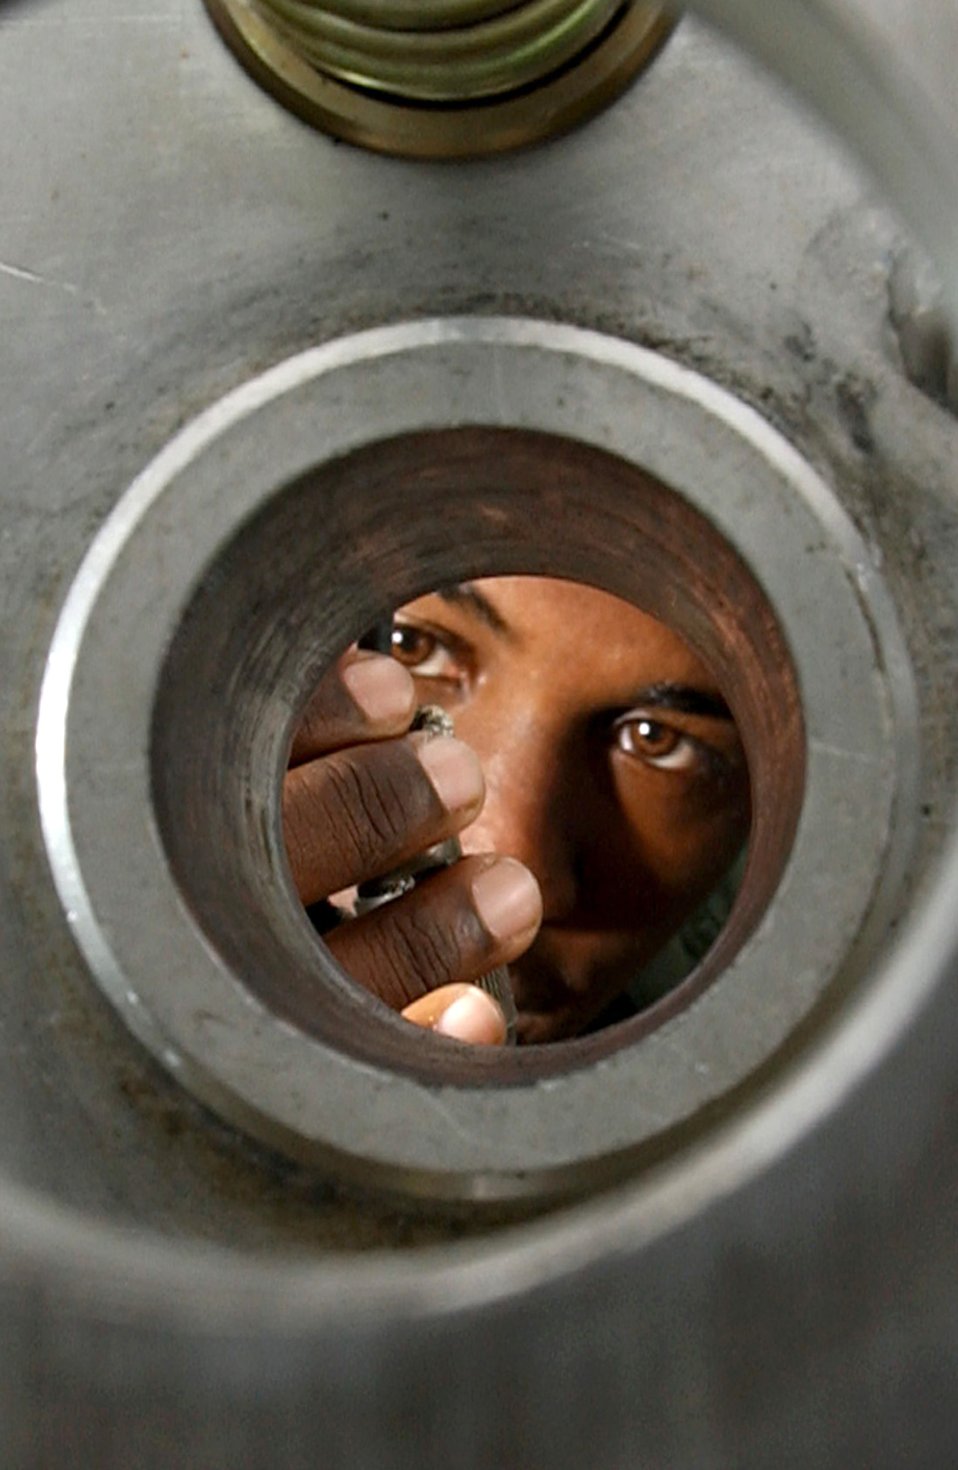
Robot work

MACDILL AIR FORCE BASE, Fla. (AFPN) -- Senior Airman Wayne Howell does a preventive maintenance inspection here on the tool mount of a remote operated neutralization system Jan. 30. The system is used to retrieve explosive devices. Airman Howell is an explosive ordnance disposal technician with the 6th Civil Engineer Squadron.